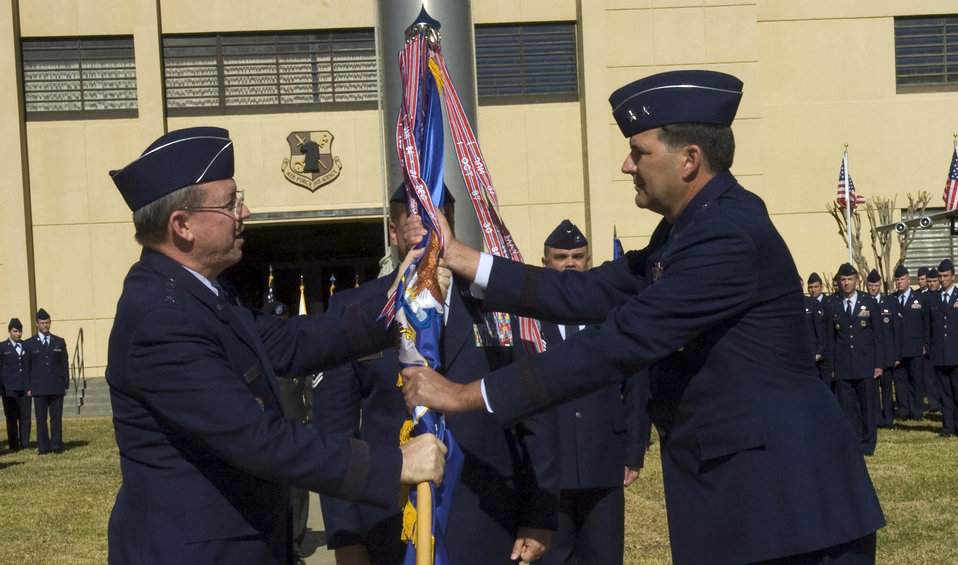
ISR change of command ceremony

Lt. Gen. David A. Deptula (left), deputy chief of staff for intelligence, surveillance and reconnaissance at the Pentagon, passes the guidon to Maj. Gen. Bradley A. Heithold during the Air Force ISR Agency change of command ceremony held Feb. 11 at Lackland Air Force Base, Texas.